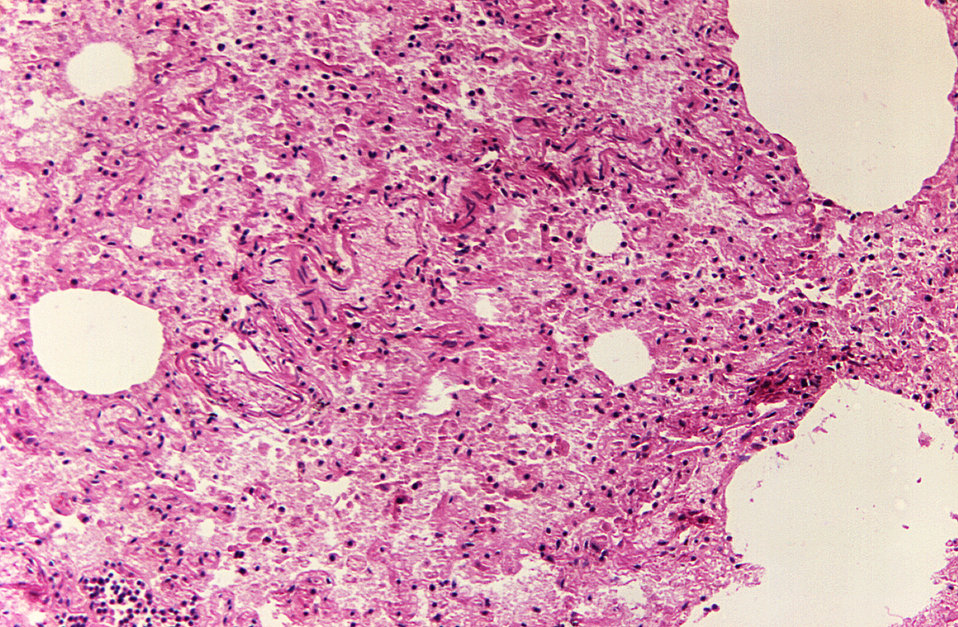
At a relatively-low magnification of 125X, this hematoxylin and eosin-stained lung tissue sample revealed the histopathologic changes indicative of what was diagnosed as a case of fatal human plague from the country of Nepal.